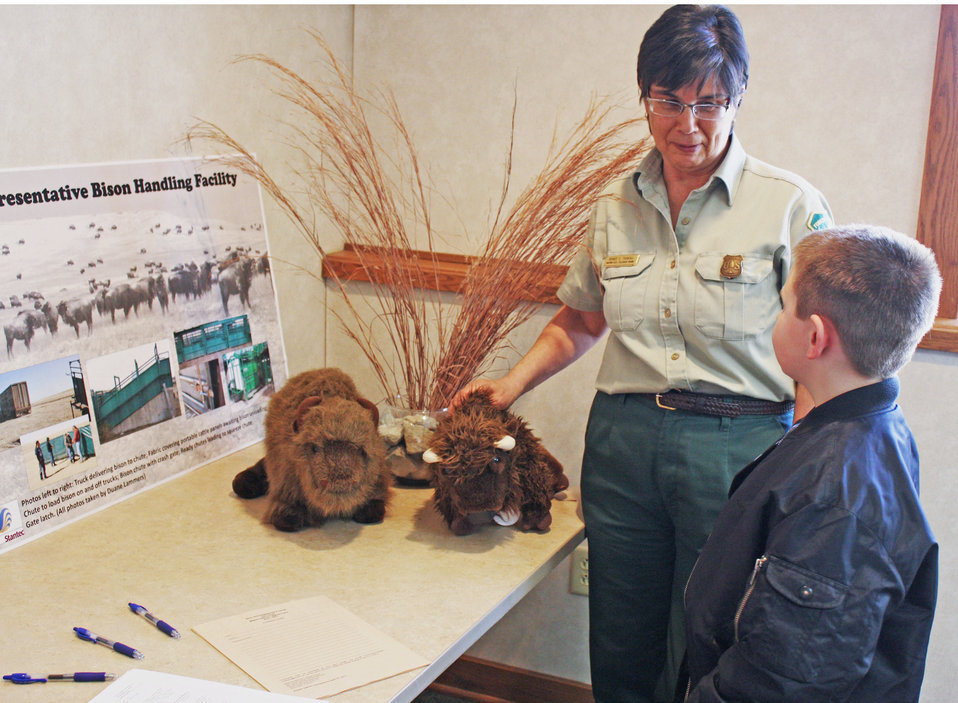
Bison Renee child-a

Midewin National Tallgrass Prairie Restoration team leader Renee Thakali chats with a local child about the bison and the benefits they would bring to the prairie on Apr. 3, 2013.